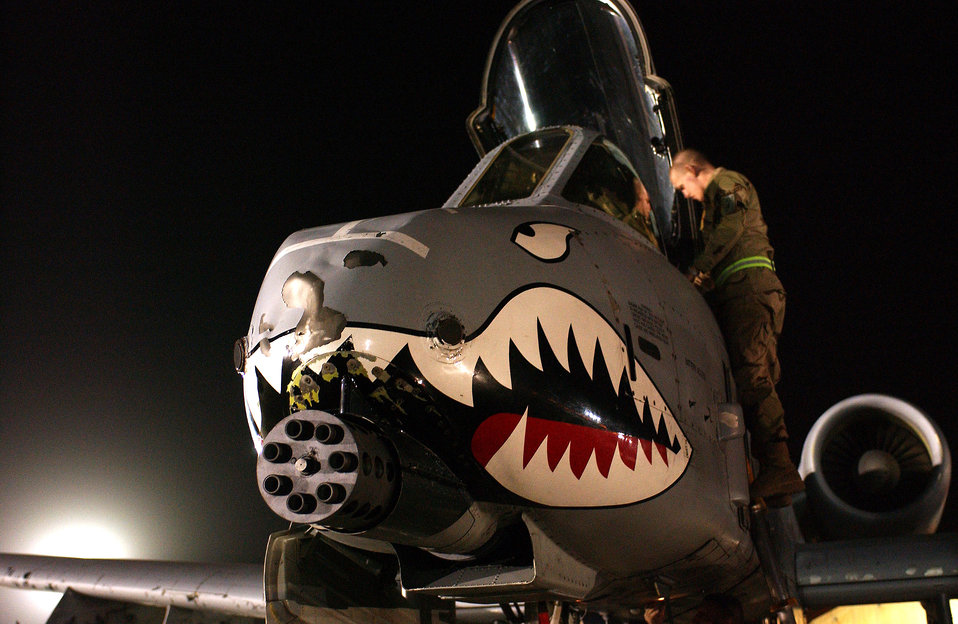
Tank killer

OPERATION IRAQI FREEDOM -- An Air Force crew chief from the 332nd Air Expeditionary Wing inspects the cockpit of an A-10 Thunderbolt II on March 23 at a forward-deployed Operation Iraqi Freedom location. The A-10, known for its tank-killing prowess during Desert Storm, is a key ally for coalition ground forces in Operation Iraqi Freedom.